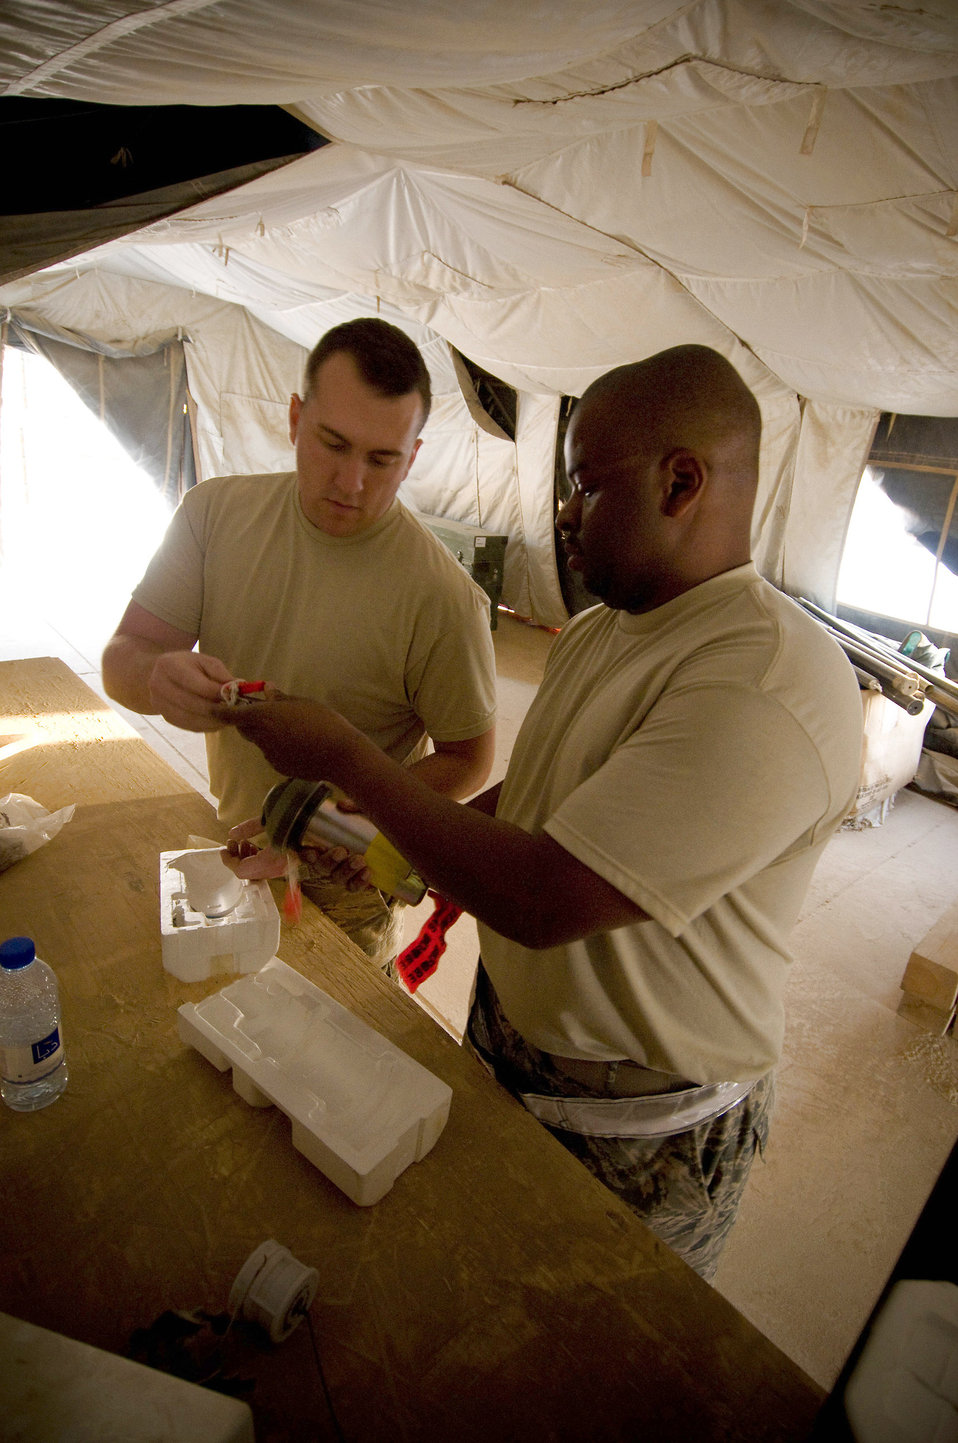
Kandahar team provides ammunition to win the fight

Staff Sgt. Jared Wood and Master Sgt. James Bradley inspect joint programmable fuzes Oct. 27 at Kandahar Airfield, Afghanistan. Part of their role is to perform operation and function checks to ensure bombs and missiles will detonate when they are supposed to. They are assigned to the 451st Air Expeditionary Group Logistics Flight-Ammo. Sergeant Wood is deployed from Langley Air Force Base, Va., and Sergeant Bradley is deployed from Minot AFB, N.D.